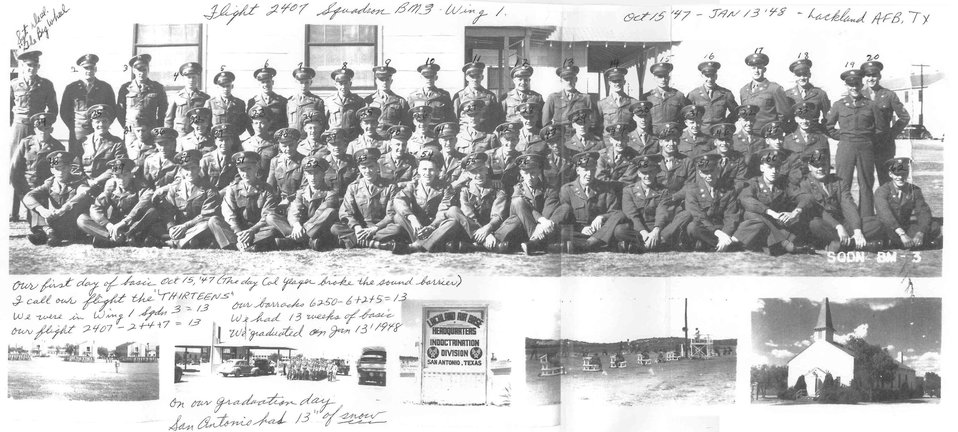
History project seeks basic-training photos